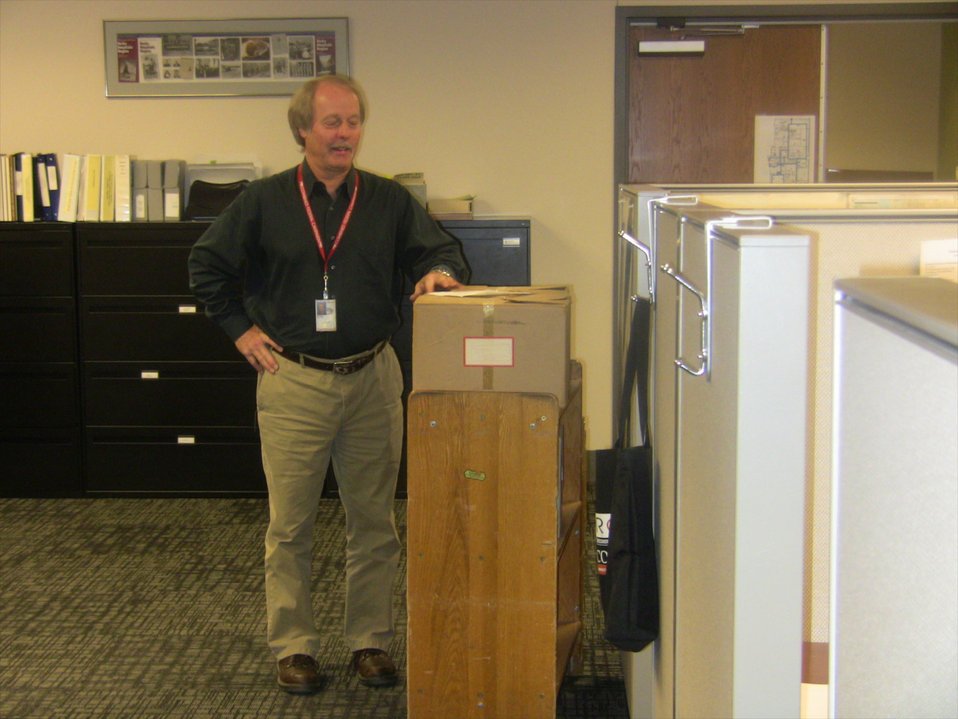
Eric Bittner getting ready to screen unscheduled Forest Service Records; Location: National Archives at Denver, Broomfield, CO